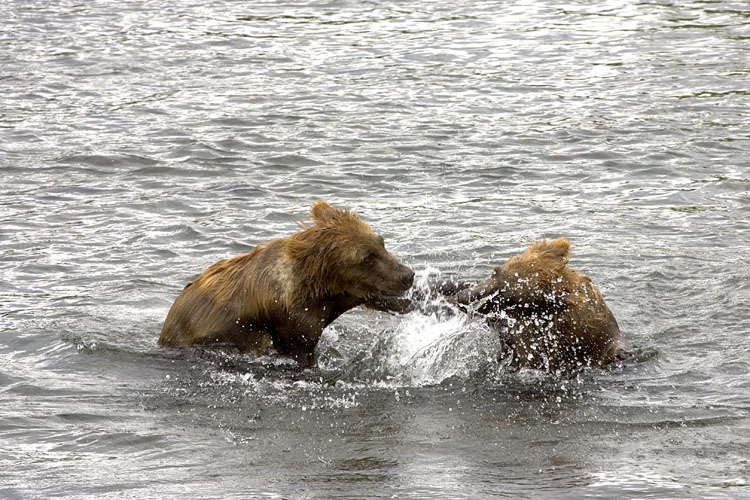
KOD Hildebrand (23)

Kodiak National Wildlife Refuge- Wildlife